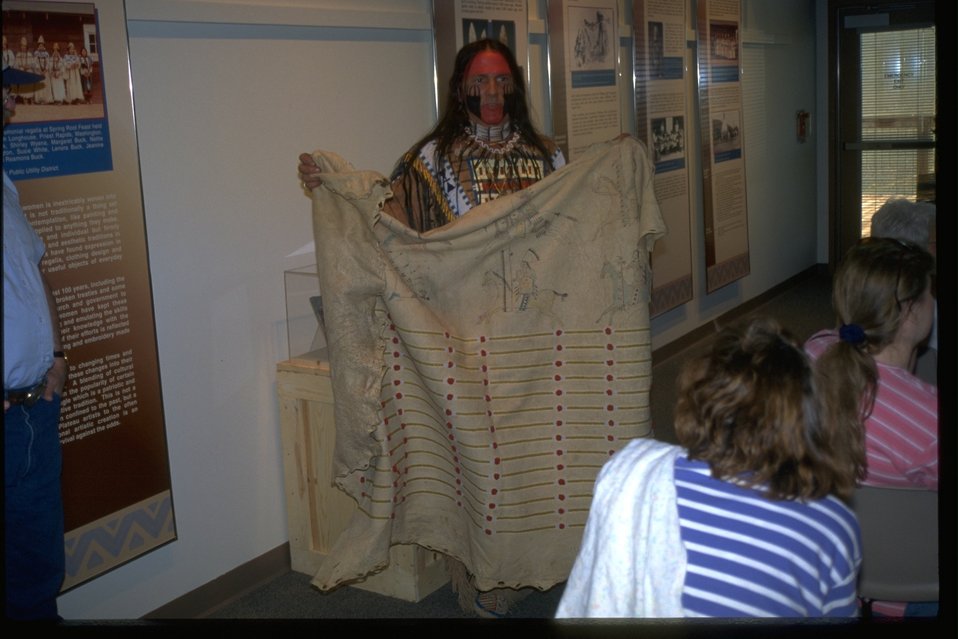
Michael Terry displaying Native American artifacts for visitors at the NHOTIC.